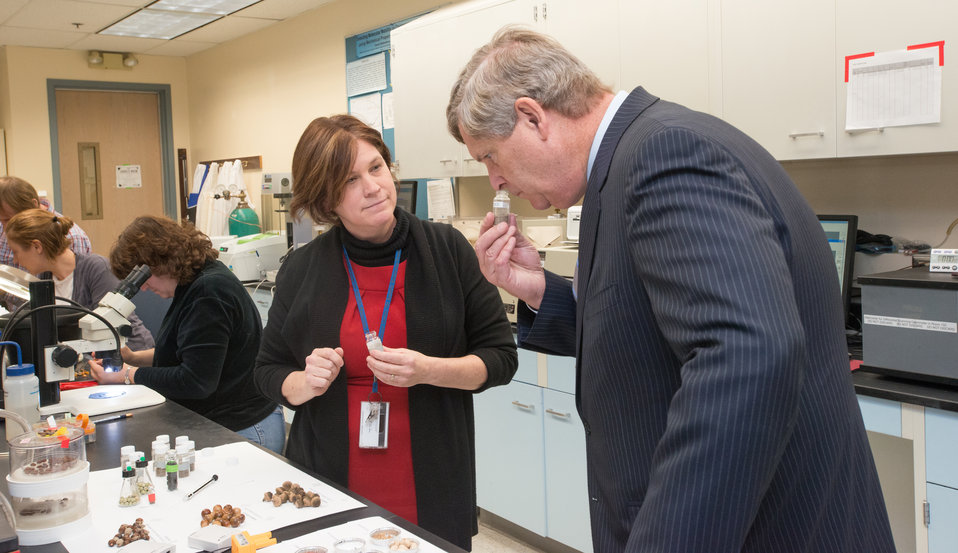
U.S. Department of Agriculture (USDA) Agriculture Research Service (ARS) National Center for Genetic Resources Preservation (NCGRP) Plant Germplasm Preservation Research Unit (PGPRU) Research Leader, Lead Scientist Dr. Christina Walters, explains to Agriculture Secretary Tom Vilsack the research that is being conducted, in Ft. Collins, CO, on Wednesday, Nov. 6, 2013.